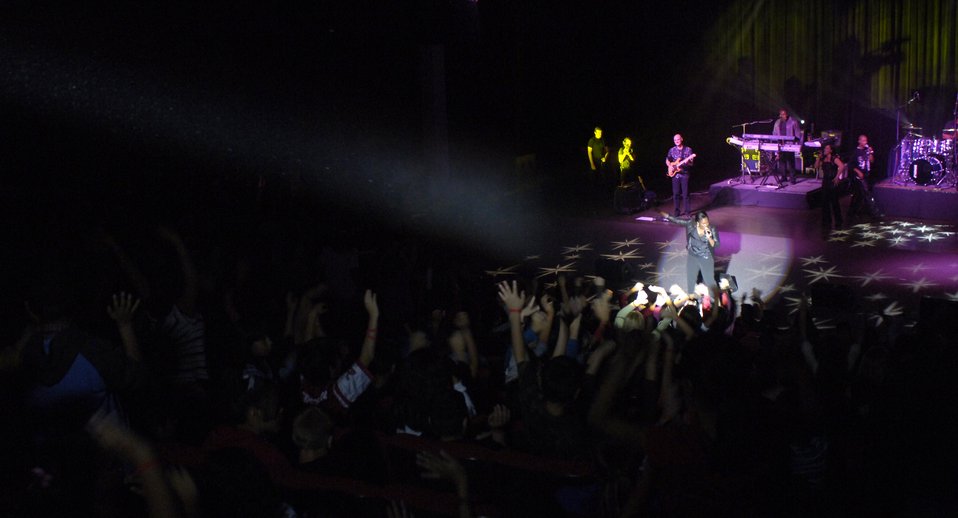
Sergeant takes Anti-drug battle personally

Reserve Generation, part of the Air Force Reserve Command Band from Robins Air Force Base, Ga., performs for third through seventh grade students attending an anti-drug concert Oct. 25 at Trinity University in San Antonio. The concert was part of National Red Ribbon Week, an anti-drug campaign focused on educating individuals, families and communities on the destructive effects of drugs and the positive alternative life choices that are available to youth. The 2006 Red Ribbon Week runs from Oct. 23 to 29.